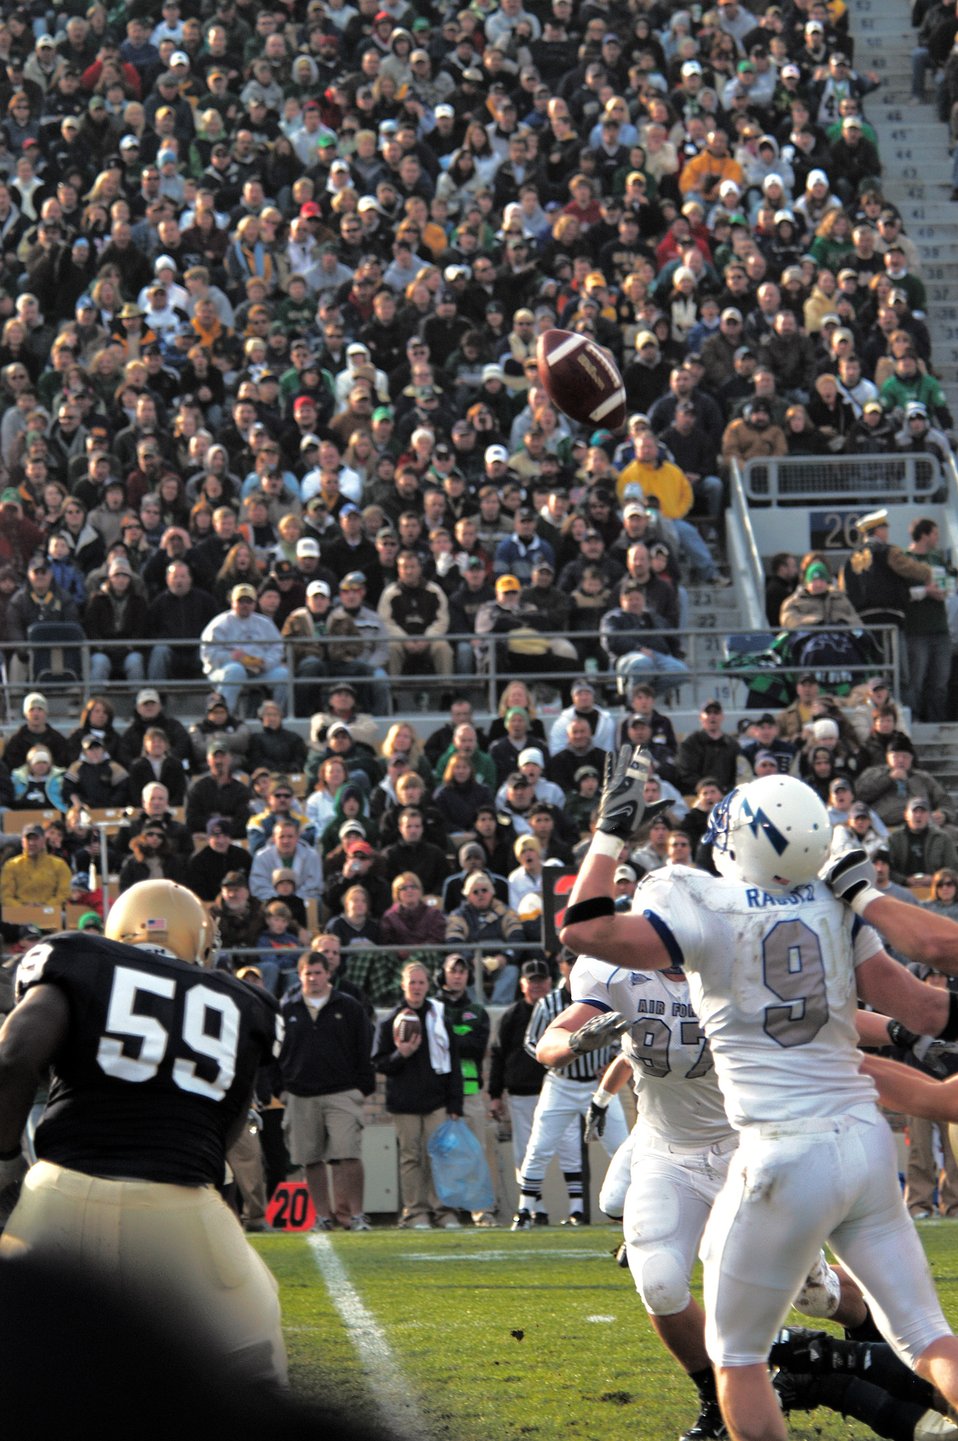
Football: Falcons outfight Irish, 41-24

U.S. Air Force Academy Falcon outside linebacker John Rabold, 9, zeroes in a popped up fumble in the first quarter of Air Force's 41-24 victory over the Fighting Irish Nov. 10 at Notre Dame Stadium in Indiana. Rabold recovered the turnover and ran 19 yards for the Falcons' first touchdown.